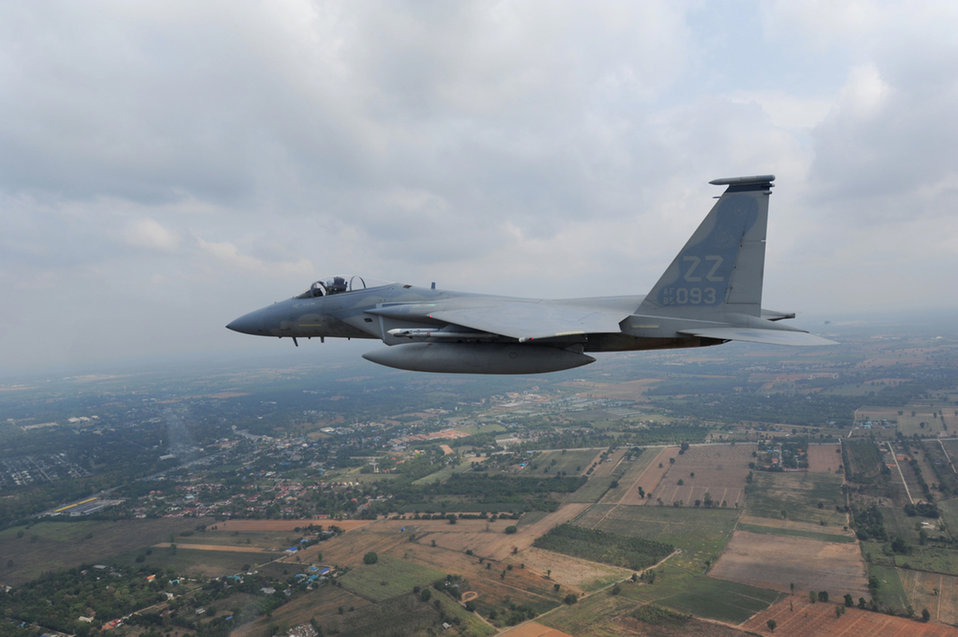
Cope Tiger 2011

An F-15 Eagle assigned to the 44th Expeditionary Fighter Squadron at Kadena Air Base, Japan flies over Thailand March 23, 2011, after completing an exercise scenario during Cope Tiger 2011, which runs from March 14 through 25. Participants of Cope Tiger include the U.S. Air Force, the U.S. Marine Corps, the Royal Thai Air Force, Royal Thai Army and the Republic of Singapore Air Force.